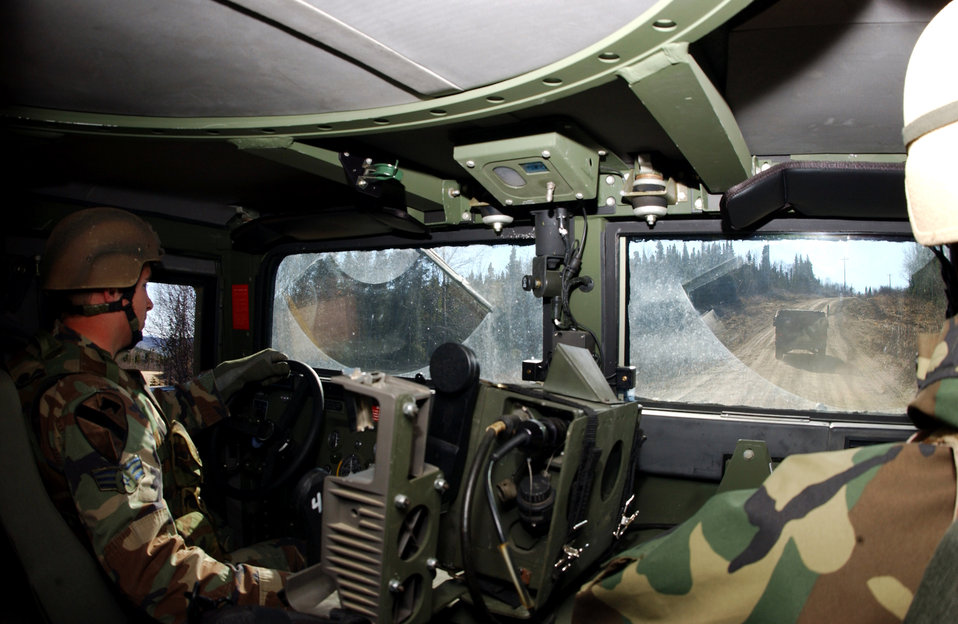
Practice makes perfect during Ursa Minor

Senior Airman Robert Olson drives a Humvee during a vehicle navigation exercise May 16 at Eielson Air Force Base, Alaska. The 3rd Air Support Operations Squadron tactical air control party Airman is participating in Operation Ursa Minor, a three-day field training exercise designed to provide hands-on combat training and experience to Airmen before they deploy to a combat area.